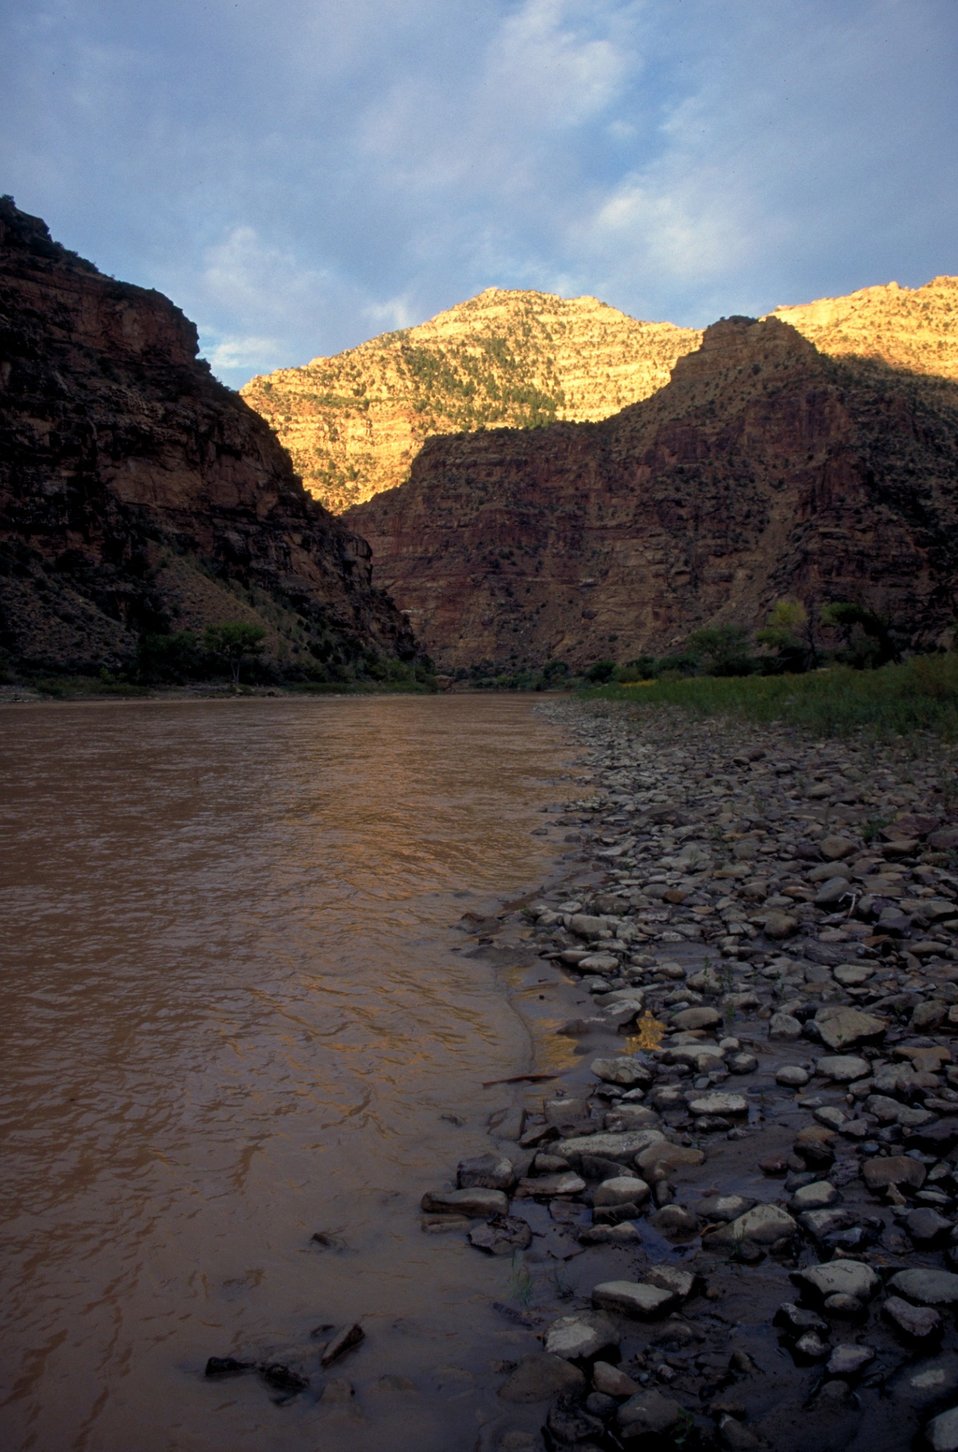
Desolation/Gray Canyons near Price, Utah.